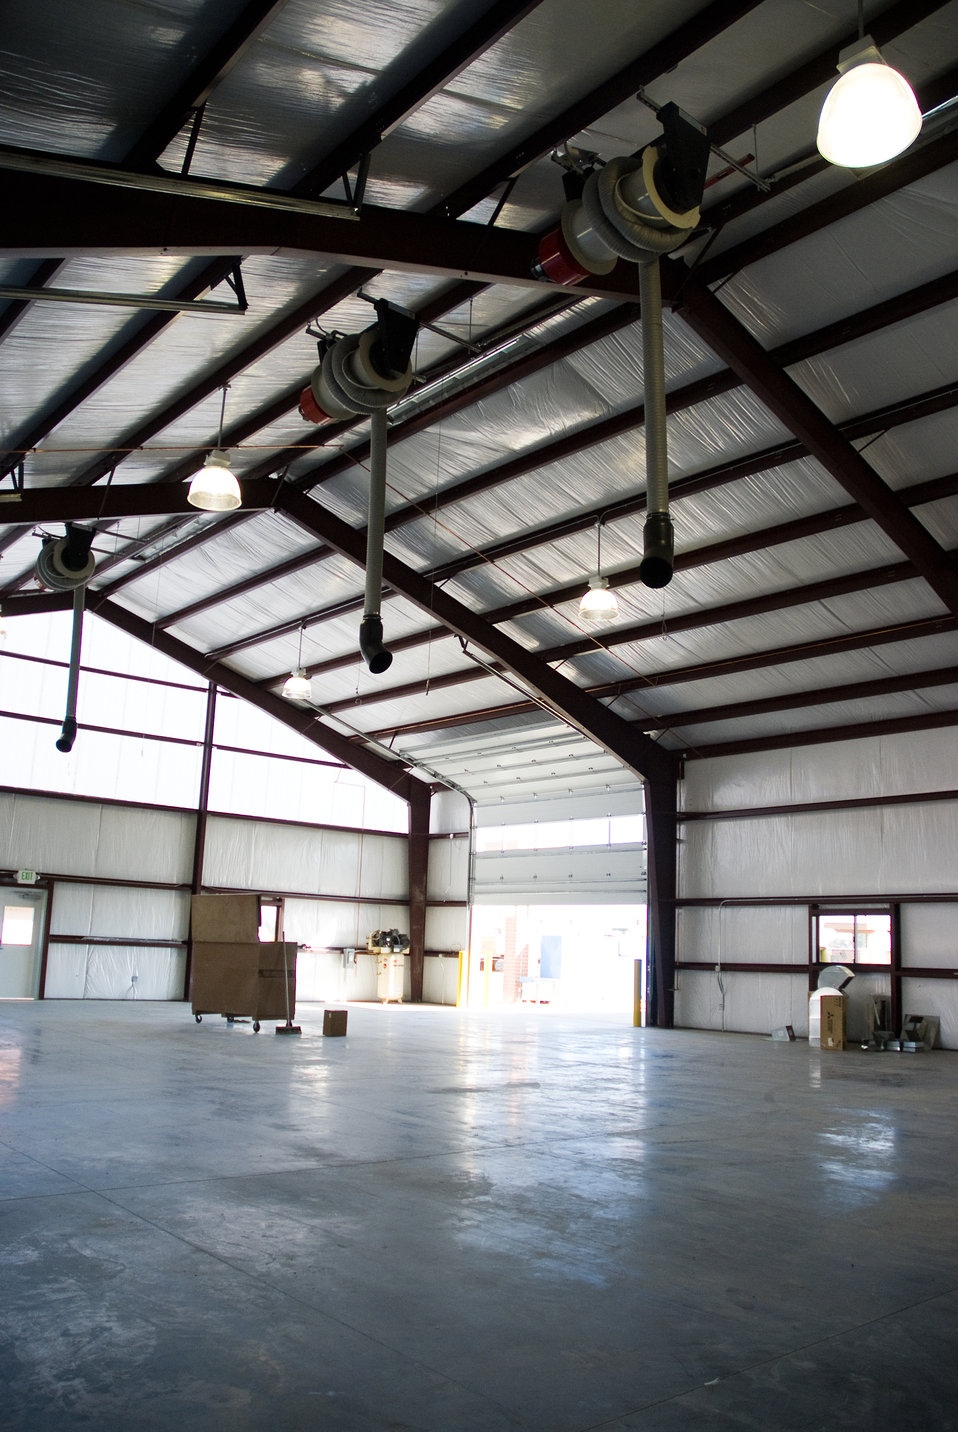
New Sacramento National Wildlife Refuge shop building

Sacramento National Wildlife Refuge shop building. This structure was built with Amreican Recovery & Reinvestment Act funds.